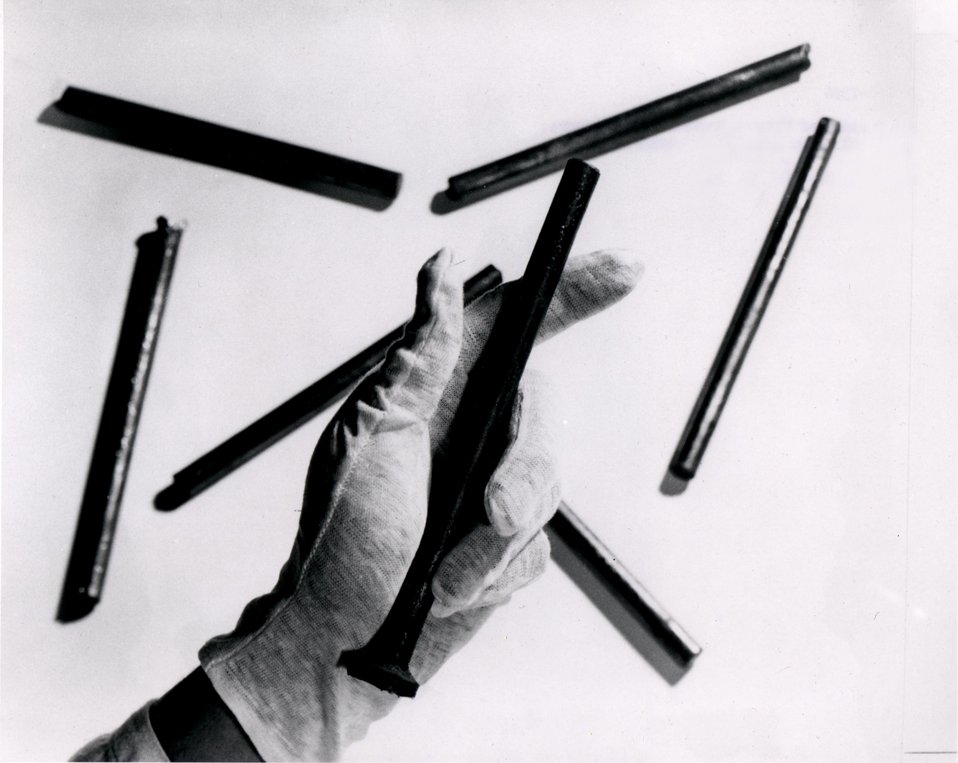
Fabrication of Uranium Carbide Fuel Elements: Cast fuel slugs prior to end-trimming. c. 1964